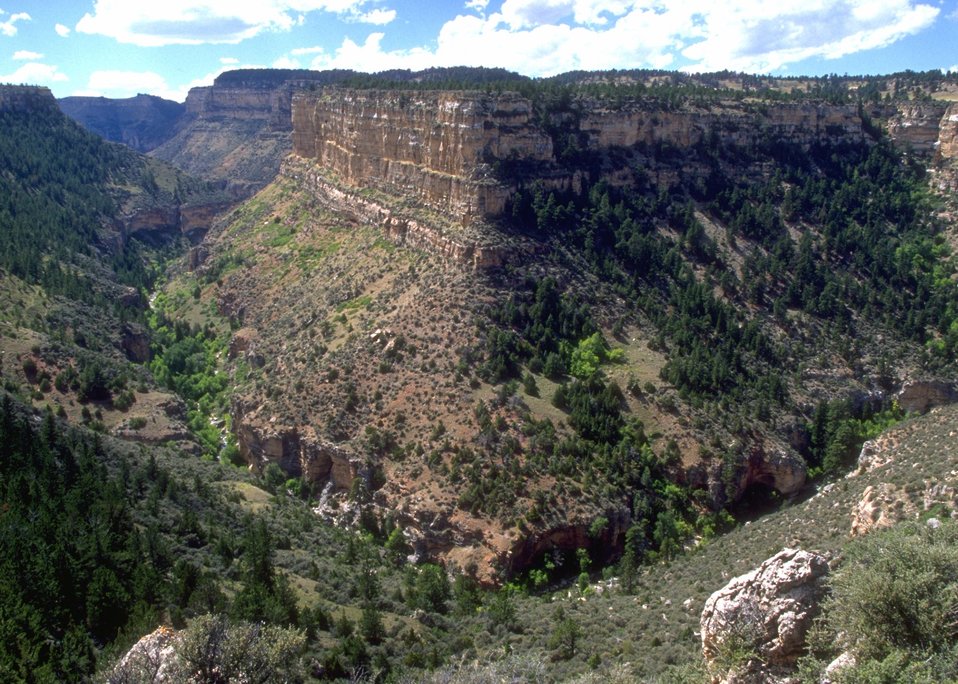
View of Hole In The Wall (middle fork of Powder River), Buffalo Field Office.